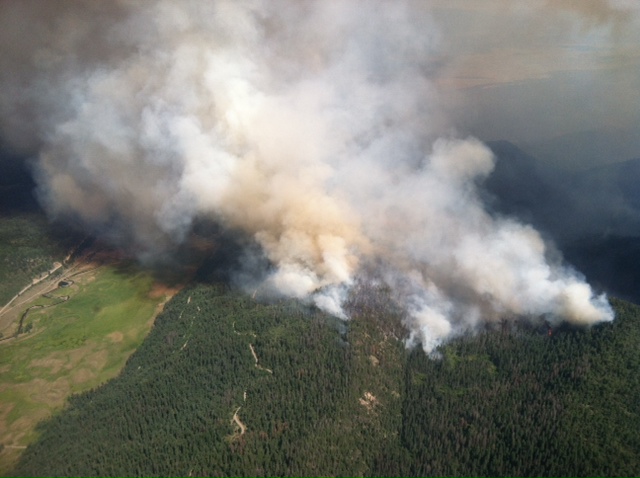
The Little Sand Wildfire burns in the San Juan National Forest near Pagosa Springs, CO, on Monday, June 18, 2012. The wildfire was started by a lightening strike on May 13, 2012. The fire is in rugged and inaccessible terrain, north of the Piedra River, and is currently estimated at 14,224 acres with 30% containment as of June 20, 2012.